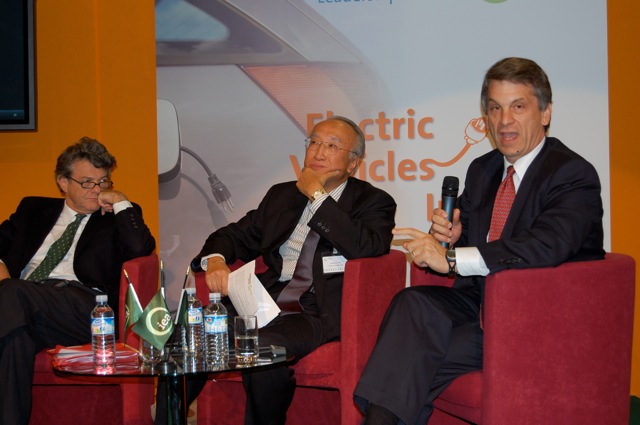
David Sandalow at the Paris Auto Show